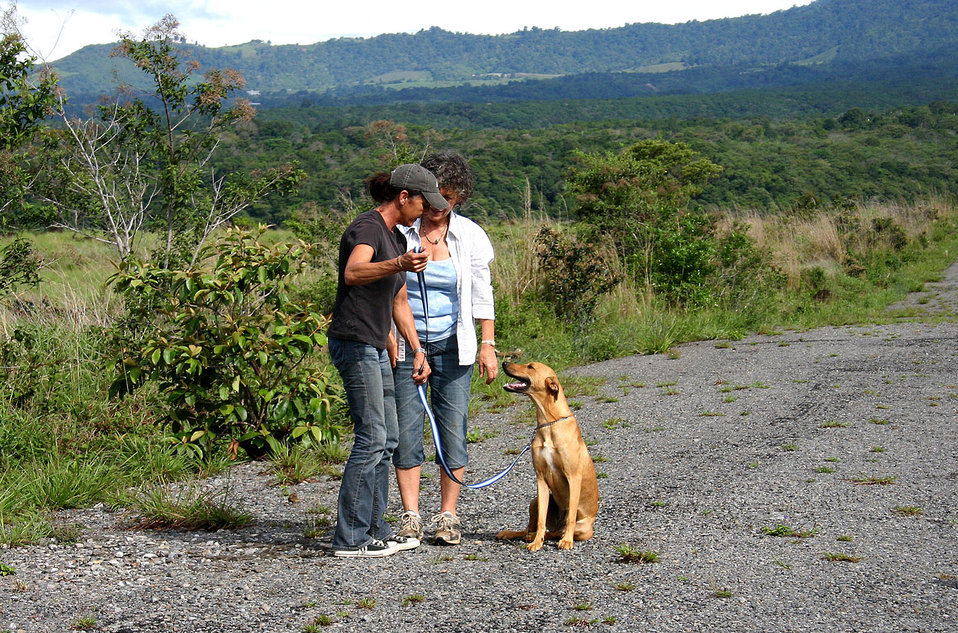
Dog training

Dog and owner paying close attention to dog trainer.